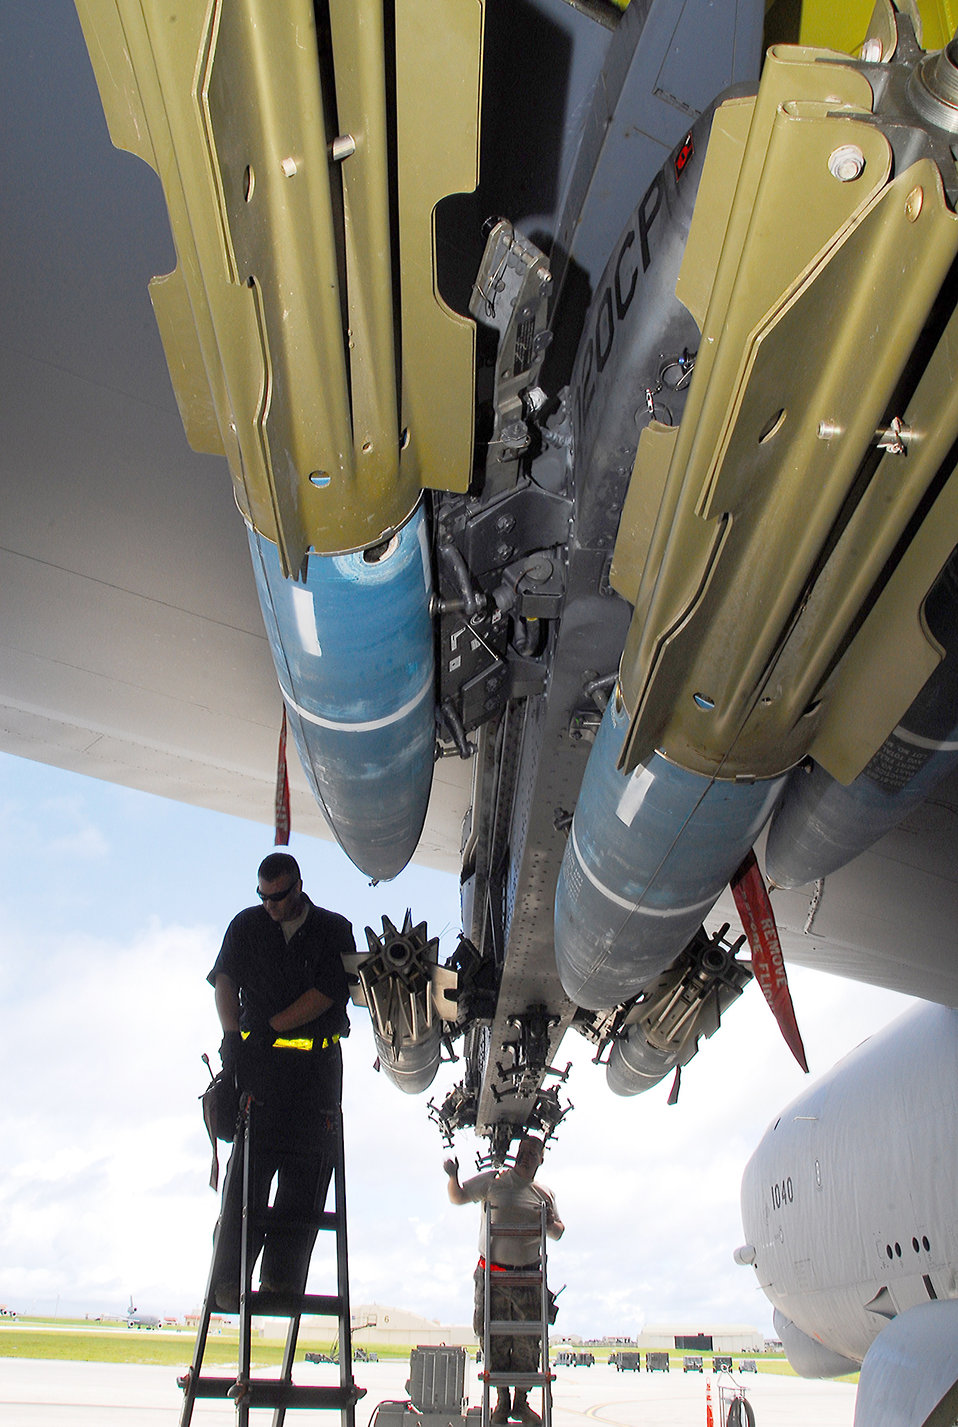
Training with mines

Staff Sgts. Dustin Hyden and Doyle Atkinson upload Mk 62 Quickstrike naval mines onto a B-52 Stratofortress during Valiant Shield Sept. 14, 2010, at Andersen Air Force Base, Guam. The joint exercise focuses on integrated joint training and interoperability among U.S. military forces. The Airmen are assigned to the 36th Expeditionary Maintenance Squadron.